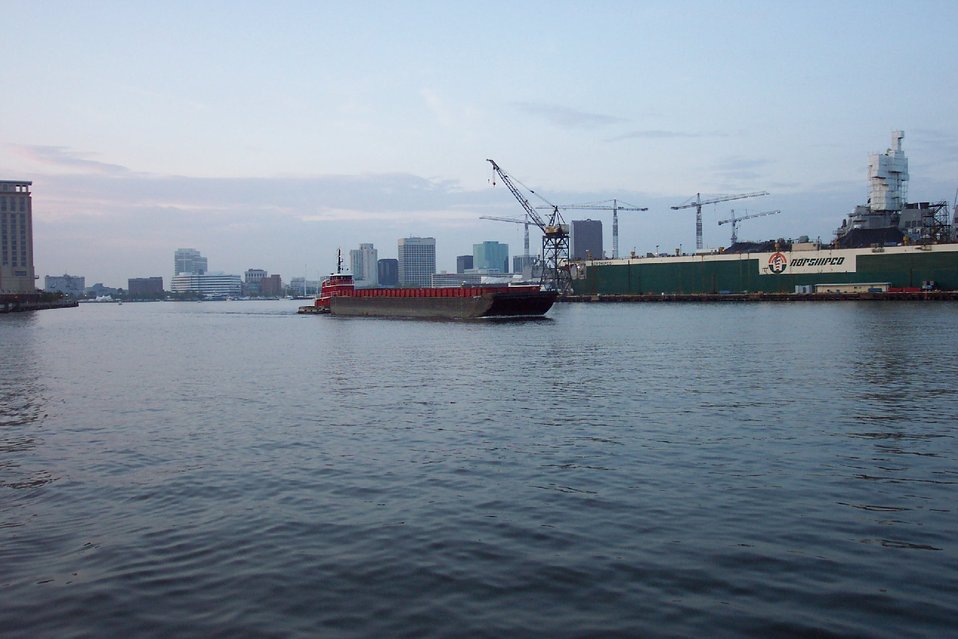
Tug pushing barge down the Elizabeth River with Norfolk skyline and shipyard in picture.